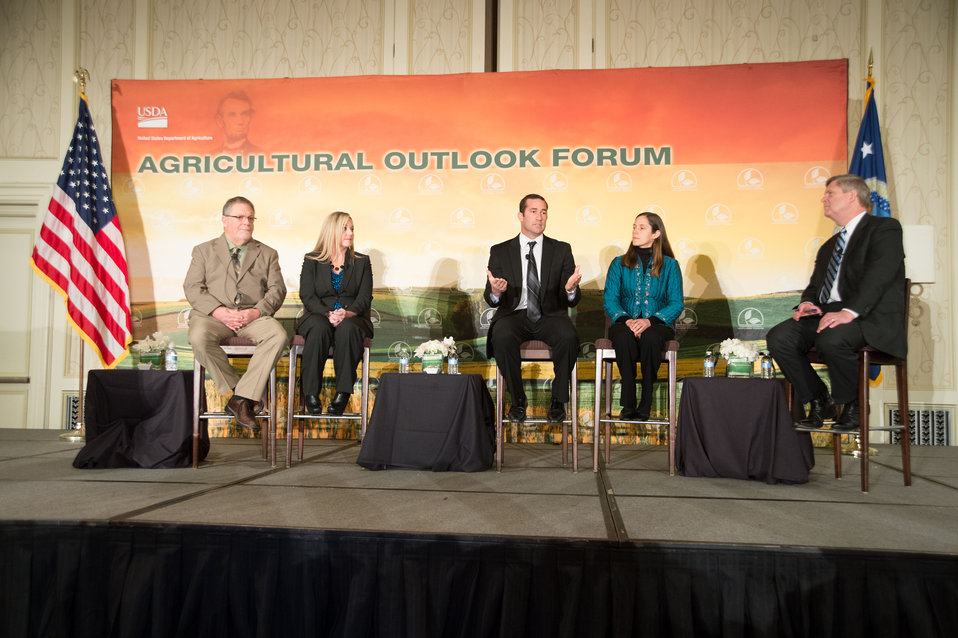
Agriculture Secretary Tom Vilsack moderates the plenary panel of Young Farmers - Unlimited Opportunities at the 2014 Agricultural Outlook Forum in Arlington, VA., on Thursday, Feb. 20, 2014. (L to R Veteran Coalition Executive Director and Farmer Michael O’Gorman, Top Producer Horizon awardee Joanna Carraway, National Outstanding Young Farmer awardee Greg Wegis, National Young Farmers Coalition Interim Director Emily Oakley, and Agriculture Secretary Tom Vilsack). The U.S. Department of Agriculture's (USDA) annual Agricultural Outlook Forum brings together the agricultural community to discuss policy, trade, science, rural development, and the economic outlook for the coming year. The Forum also focuses on forestry, health and nutrition issues, and the changing dynamics and face of rural America.USDA photo by Bob Nichols.